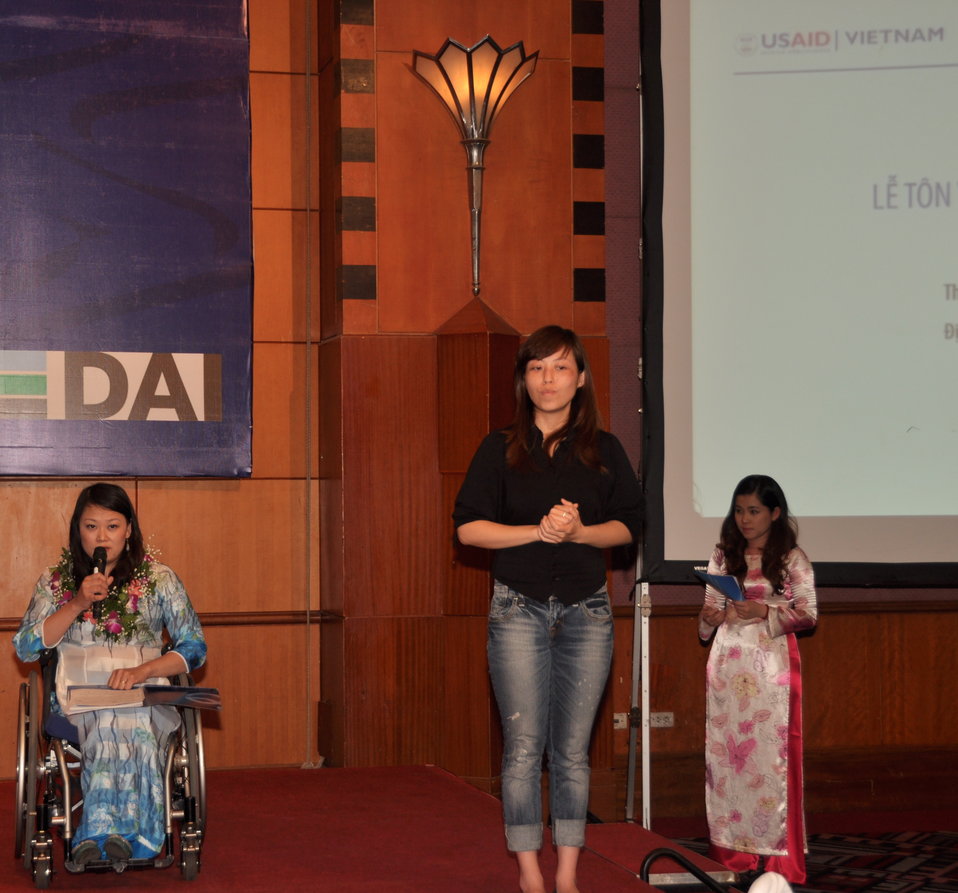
Blue Ribbon Employer Council Awards for Hiring Vietnamese with Disabilities

Hanoi, April 17, 2013